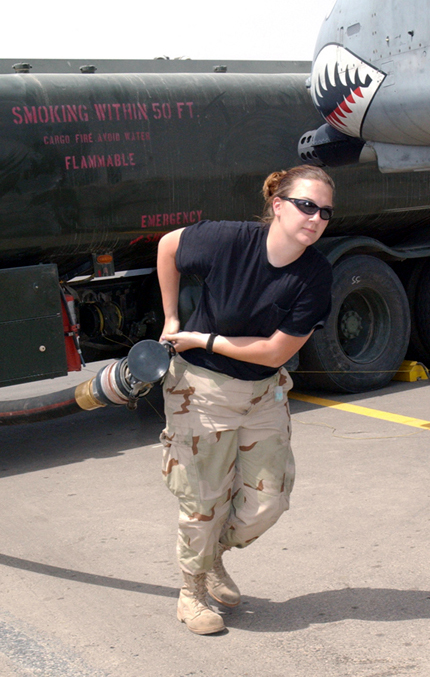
Fuel for the Thunderbolt

OPERATION IRAQI FREEDOM -- Airman 1st Class Miriah Campbell prepares to gas up an A-10 Thunderbolt II on the flightline at a desert air base in the Arabian Gulf Region. Campbell is fuels specialist with the 332nd Air Expeditionary Wing supporting Operation Iraqi Freedom.